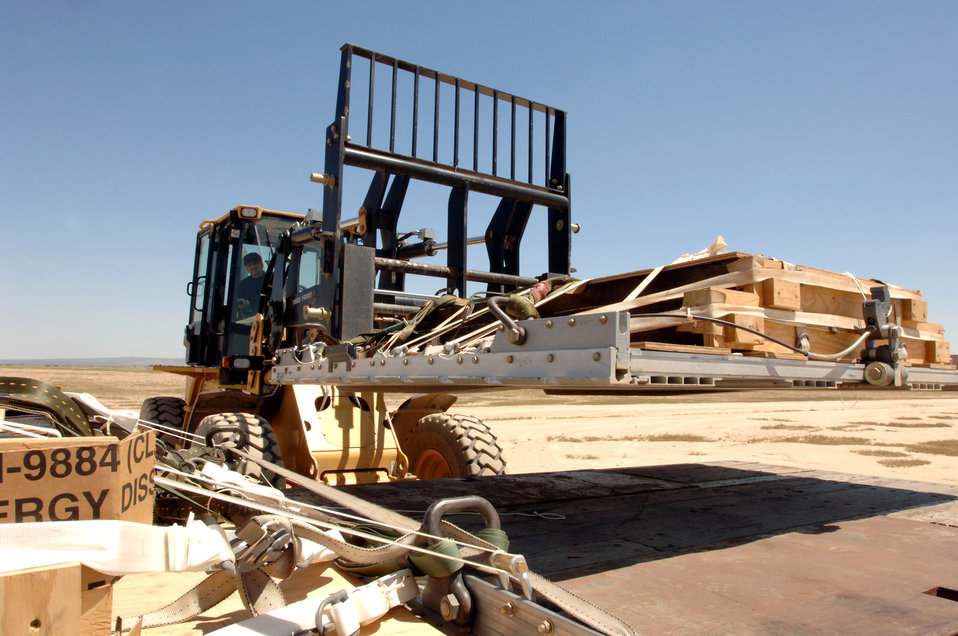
Pallet drop over California

Master Sgt. Ruben Camacho loads a Type 5 heavy pallet onto a truck at Edwards Air Force Base, Calif., after it was dropped by a C-130J Hercules on Sunday, April 30, 2006. The mission was part of a test to certify the aircraft's capability to drop this type of pallet. Guard, Reserve and active-duty aircrews from Channel Islands Air National Guard Base, Calif.; Little Rock AFB, Ark.; and Keesler AFB, Miss., participated in the certification. This was the first time the